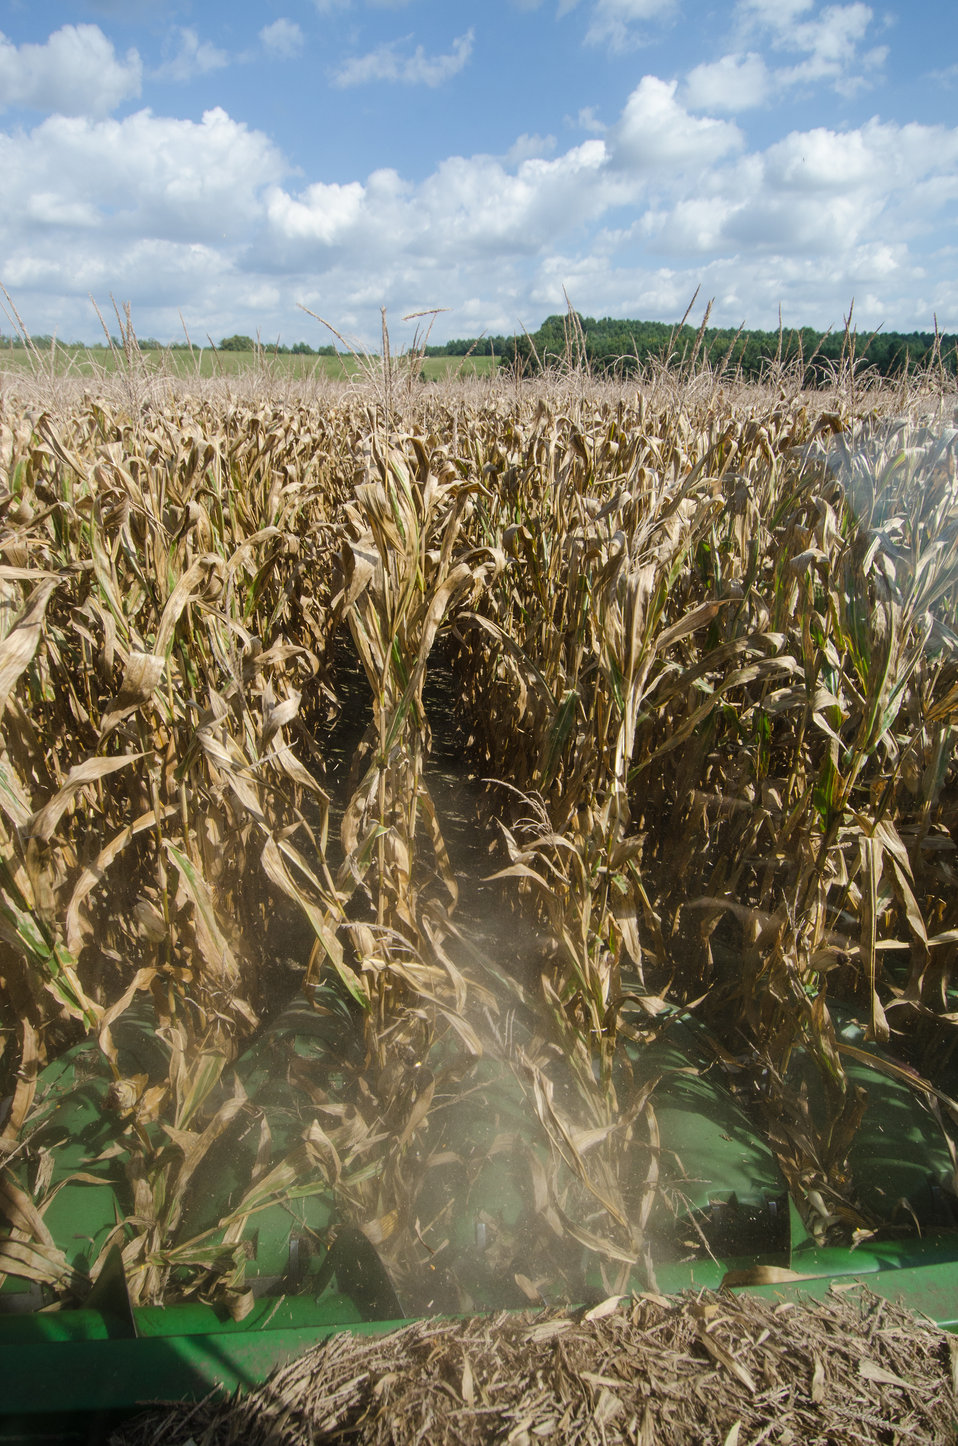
The view from the cab of a combine, driven by John N. Mills, Jr., as he follows a GPS guided course through his fields of feed corn, during the Friday, Sept. 20, 2013, harvest at the John N. Mills & Sons farm; a family owned business located in the Hanover and King William Counties Virginia, on Friday, Sept. 20, 2013. Pleasant Level Farm was the original farm from a Land Grant from King George III of England to Nicholas Mills in 1725. The original acreage has never left the Mills family name and continues to be farmed by the family.
Now the farm covers 5,744 acres that produce corn, wheat, soybeans, barley, hay, timber, and pastures a large herd of beef cattle. They have been using conservation and stewardship practices since the 1960s. Some of the efficient practices include no-till planting and cover crops to reduce soil erosion and prevent the leaching of nutrients into ground water, as well as livestock stream exclusion. The farm has several conservation easements that aids in the preservation and restoration of wetlands and waterways. For information about the U.S. Department of Agriculture (USDA), please go to www.usda.gov.